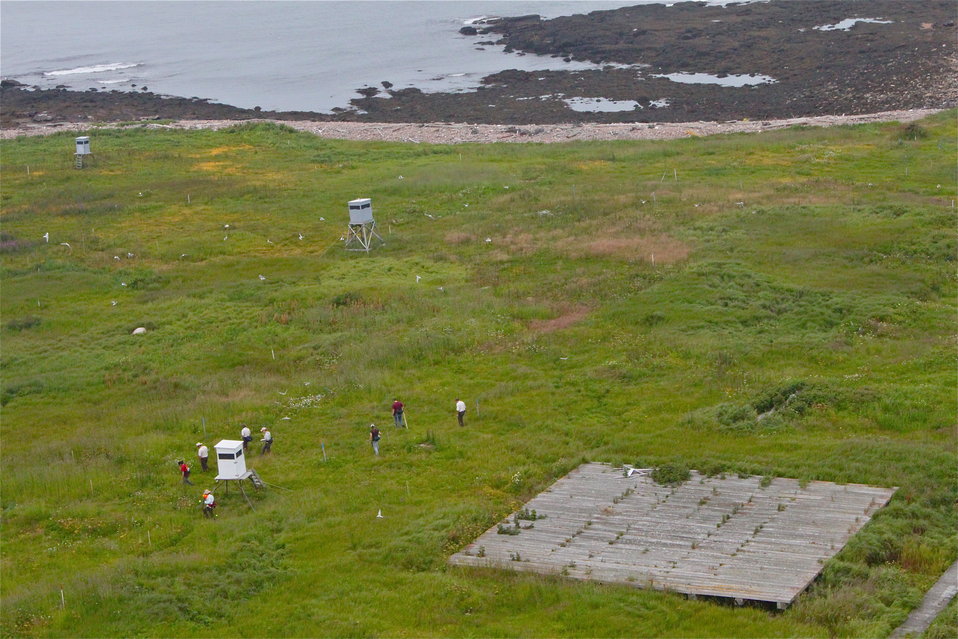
Biologists At Work